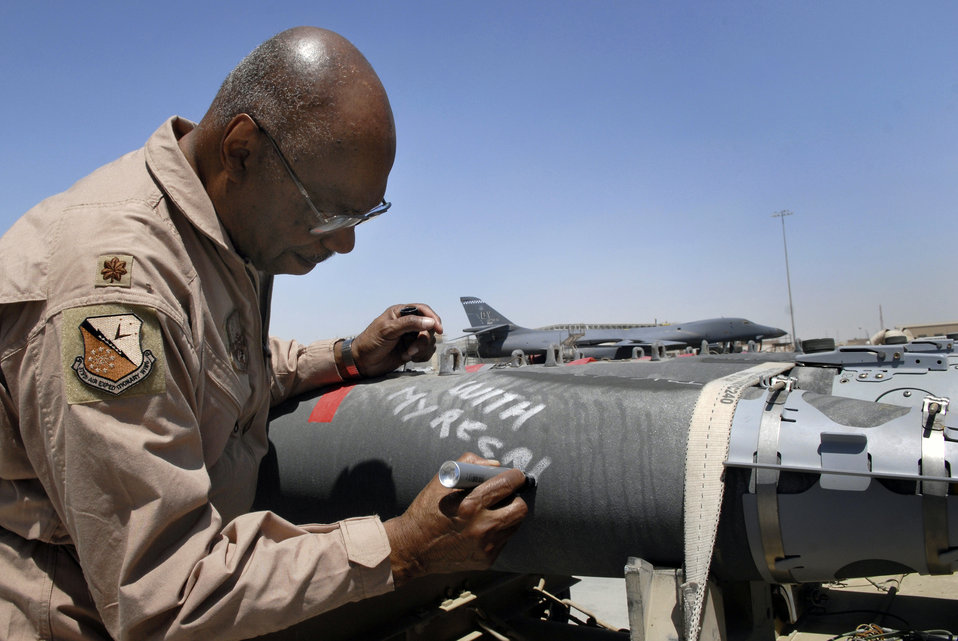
Tuskegee Airmen visit Southwest Asia

Tuskegee Airman Maj. George Boyd writes a message on a bomb being loaded on a B-1B Lancer during his visit April 22 to an air base in Southwest Asia. Major Boyd was part of a group of Tuskegee Airmen touring the area of responsibility.